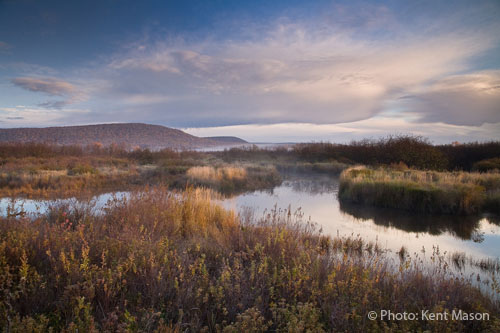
Blackwater Oxbow

The Blackwater River's slow course takes a beautiful turn through Canaan Valley National Wildlife Refuge.